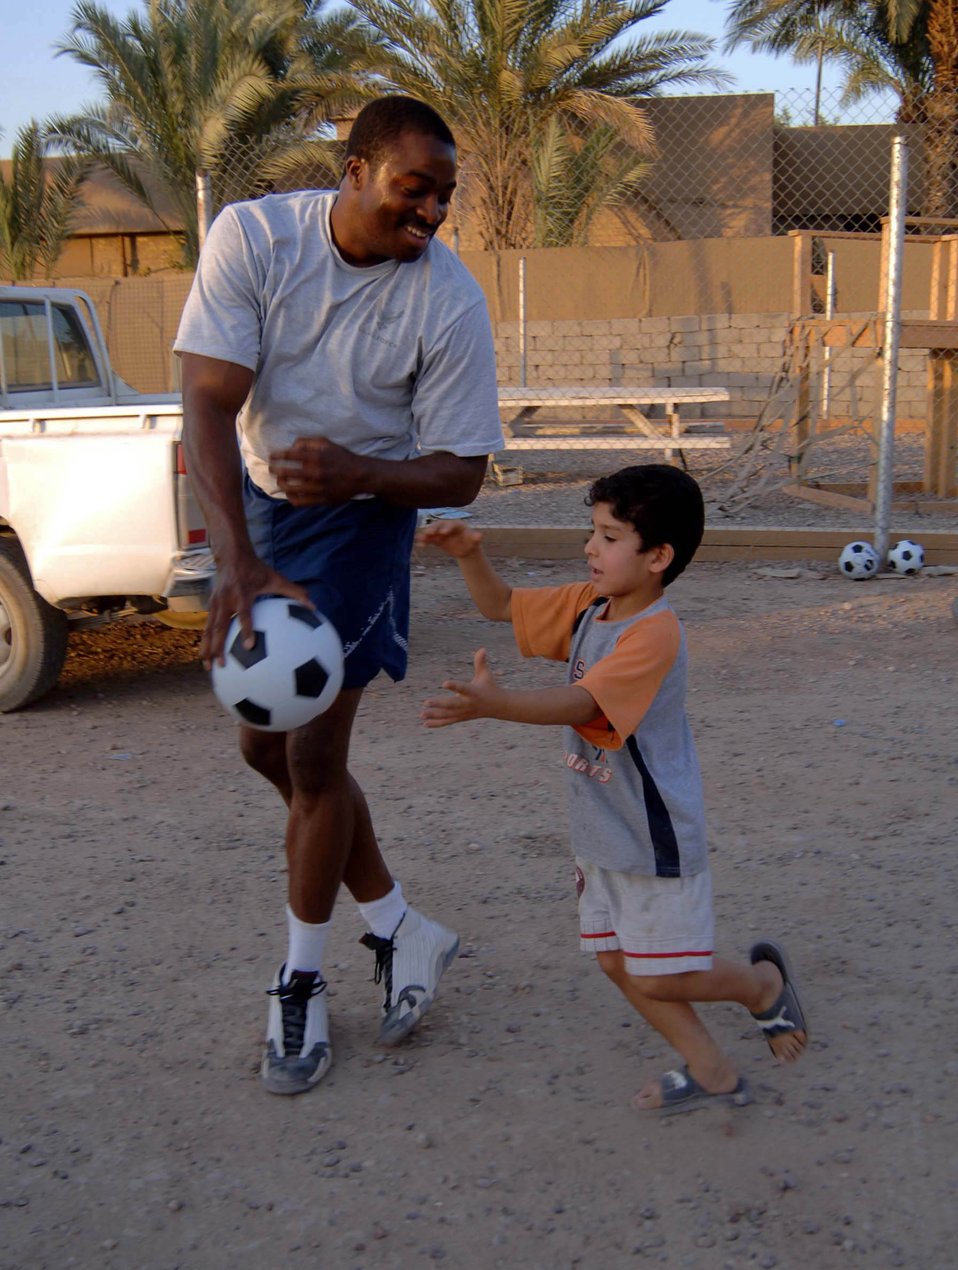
Airmen, Soldiers form relationships with Iraqi children

Senior Airman Charles Johnson plays with an Iraqi child during a humanitarian visit July 29 at Victory Base Complex, Iraq. A group of Airmen and Soldiers visited with Iraqi soldiers and their children. Airman Johnson is a 447th Expeditionary Security Forces Squadron patrolman.